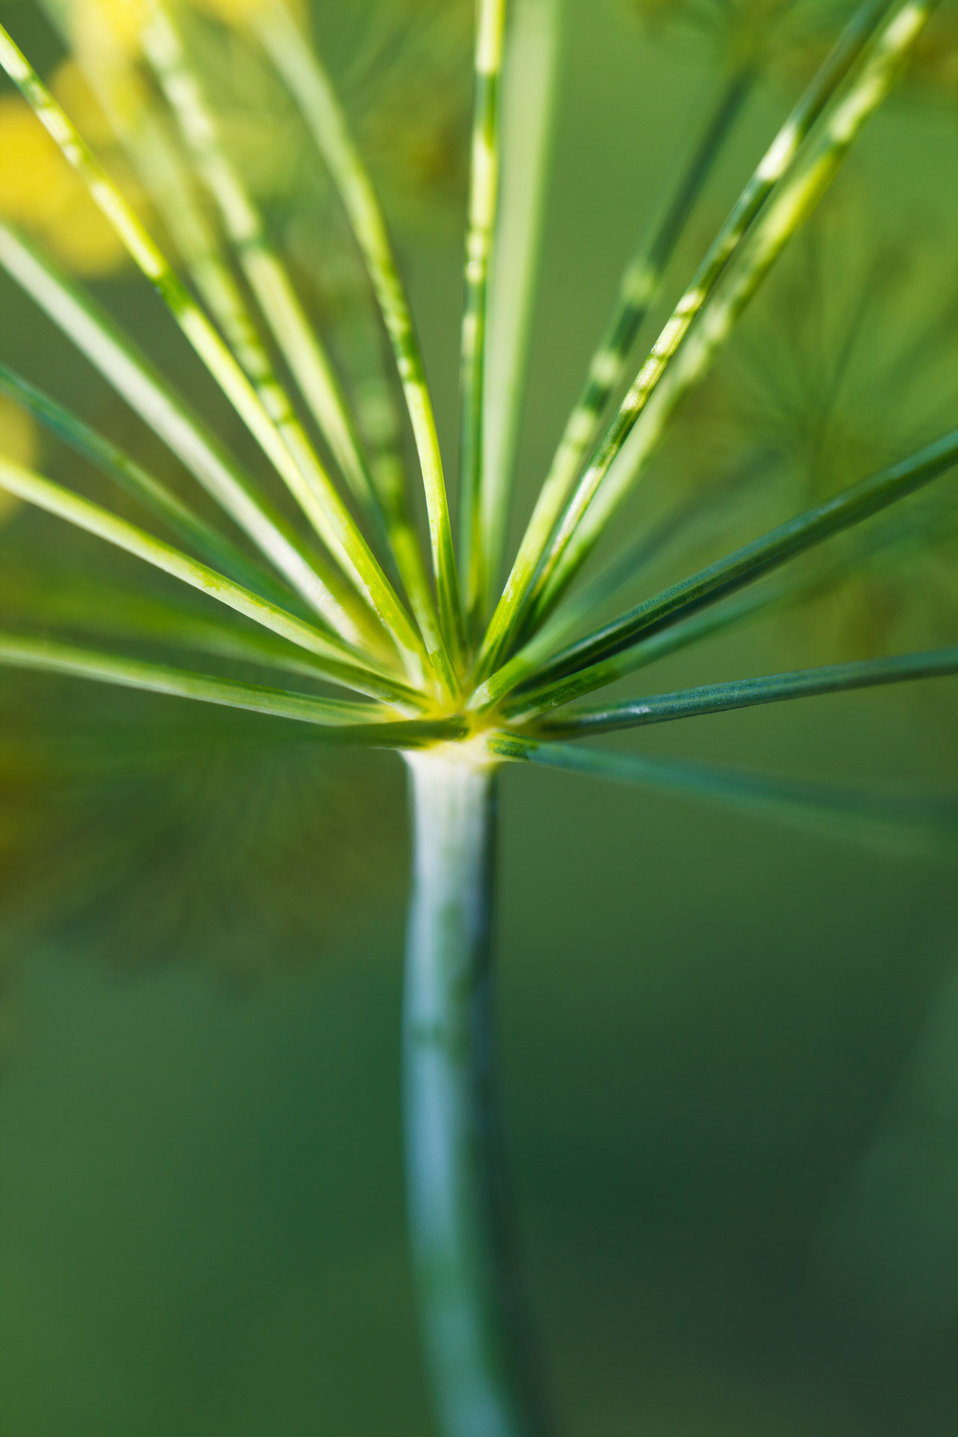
Macro of dill

Macro photo of a dill.